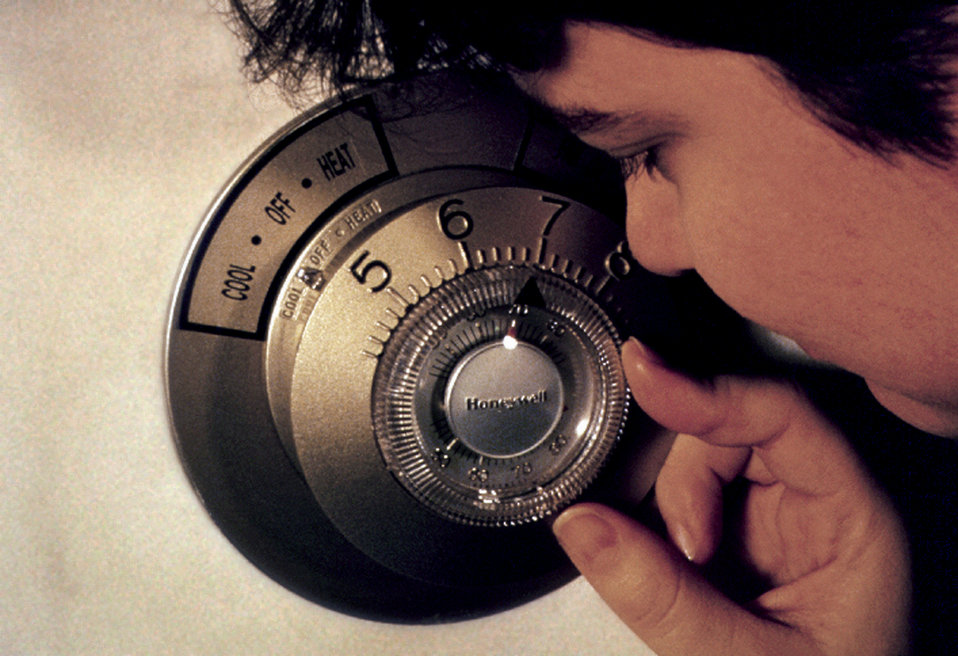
This 1997 image depicted a visually-impaired woman as she was using a thermostat that had been designed with features, which took into account the needs of end users with such vision impairment. Design elements such as tactile variations, enlarged numerals, a large, easily rotatable control dial, and a click noise cue as the temperature was being set, helped to negate difficulties that might be encountered by such visually, or mobility-impaired individuals.